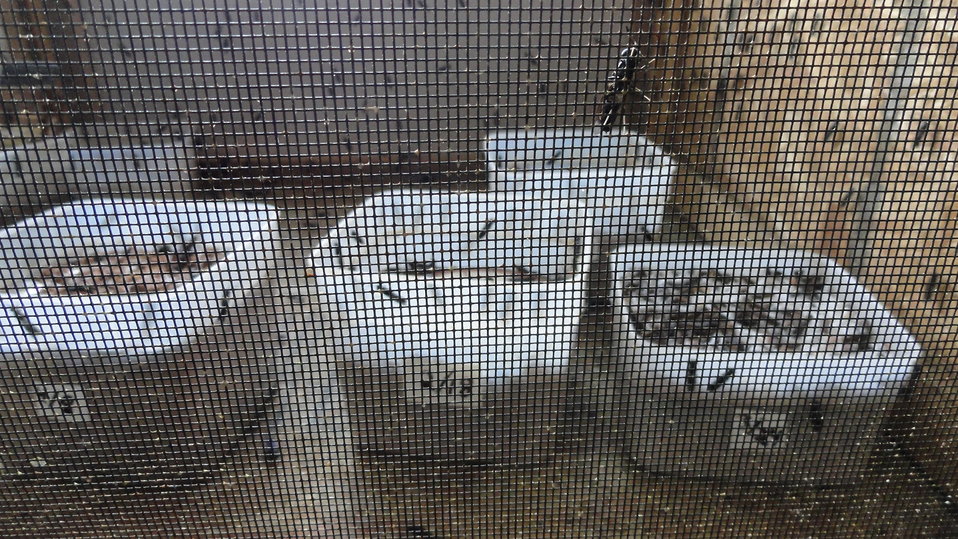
Visiting Saratoga National Fish Hatchery

In April of 2014, regional office employees visited Saratoga National Fish Hatchery to learn more about its efforts towards recovering the Wyoming toad (Bufo baxteri).

The hatchery adopted a unique role in becoming the first unit in the National Fish Hatchery System to become involved in rearing endangered amphibians. The Wyoming toad was a common sight on areas of the Laramie Plains, Albany County, Wyoming, into the early 1970s but the species' populations crashed in the mid-1970s. The Wyoming toad was listed as endangered by the U.S. Fish & Wildlife Service in January 1984. Found only in southwestern Wyoming, the Wyoming toad is considered the most endangered amphibian in North America. The hatchery maintains a captive population for breeding, rearing, and refugia, and the offspring from this program will be used for reintroduction efforts.